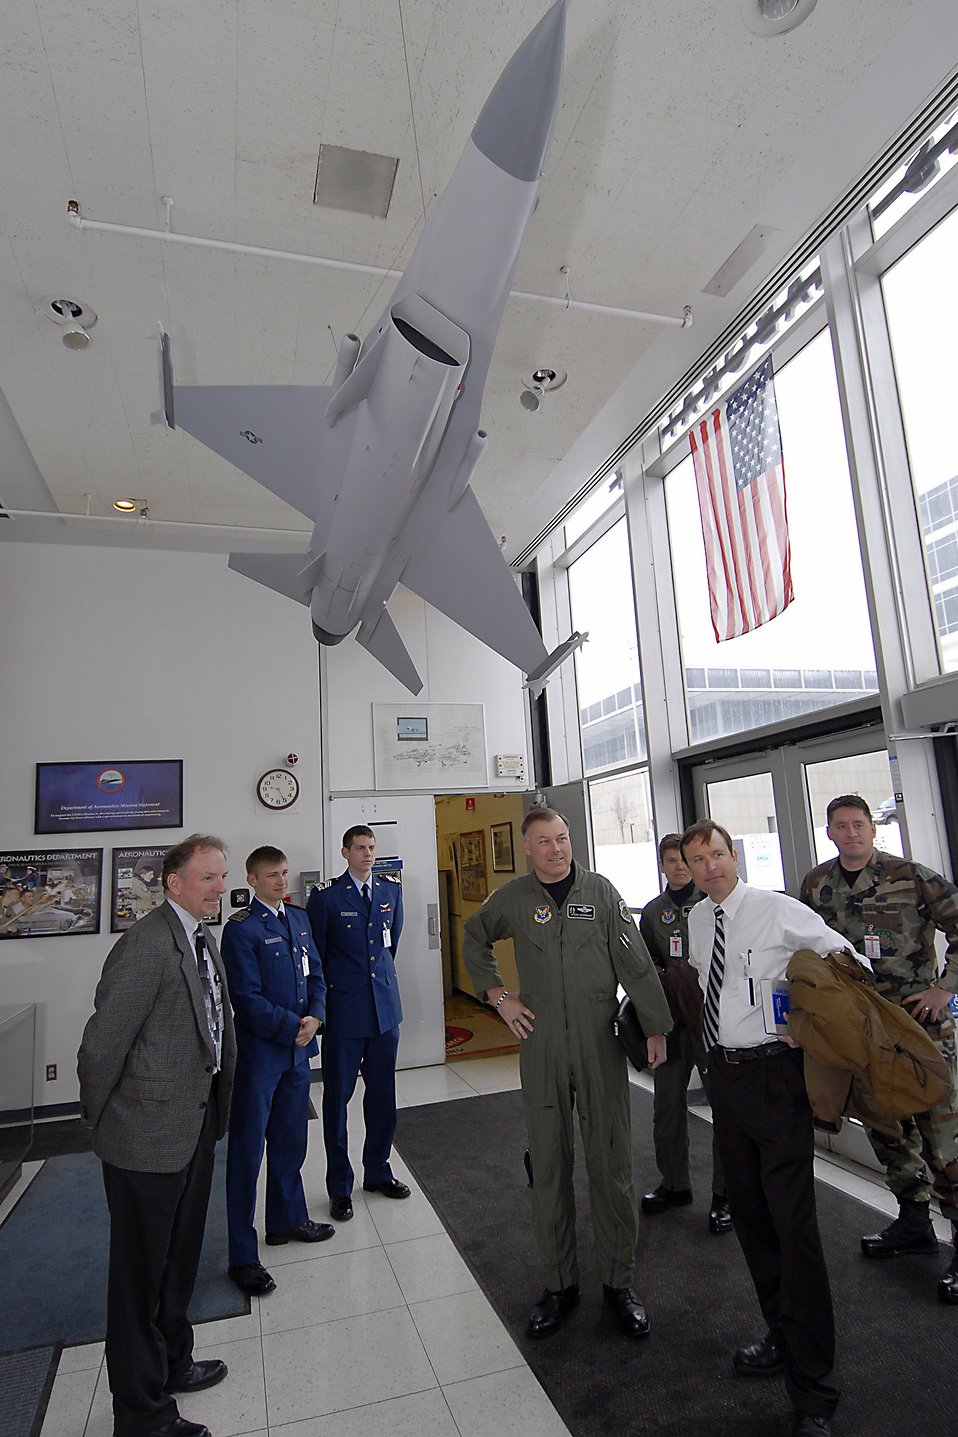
Air Force officials launch new mentoring program

Maj. Gen. Stephen T. Sargeant (middle) is greeted by U.S. Air Force Academy faculty members and cadets during a March 17 visit to the Academy in Colorado Springs, Colo. The visit included the formal signing of a memorandum of agreement between the Air Force Operational Test and Evaluation Center and the Academy creating a comprehensive mentoring program to assist Academy cadets during their academic and professional development. General Sargeant is the Air Force Operational Test and Evaluation Center commander from Kirtland Air Force Base, N.M.